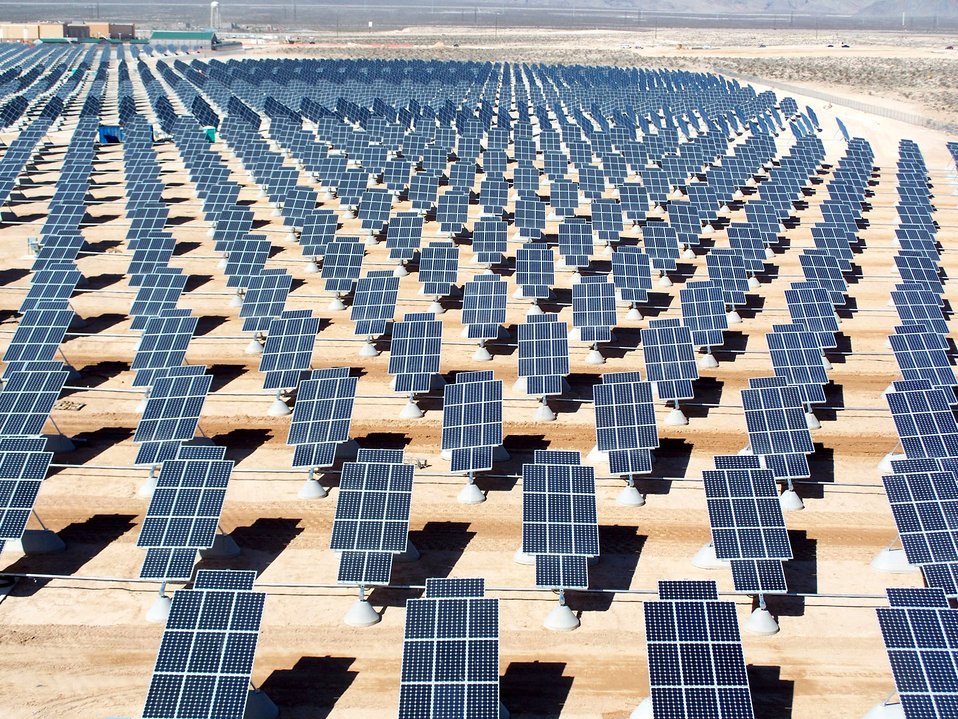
Nellis to save $1 million annually with use of solar panels

On 140 acres of unused land, 70,000 solar panels await activation as the first third of the solar photovoltaic array gets commissioned Oct. 12 with the other 66 percent of the panels scheduled for activation in the next two months at Nellis Air Force Base, Nev. Base officials and SunPower Corp. finalized a commission of 15 megawatts in solar power that can save Nellis AFB $1 million annually.